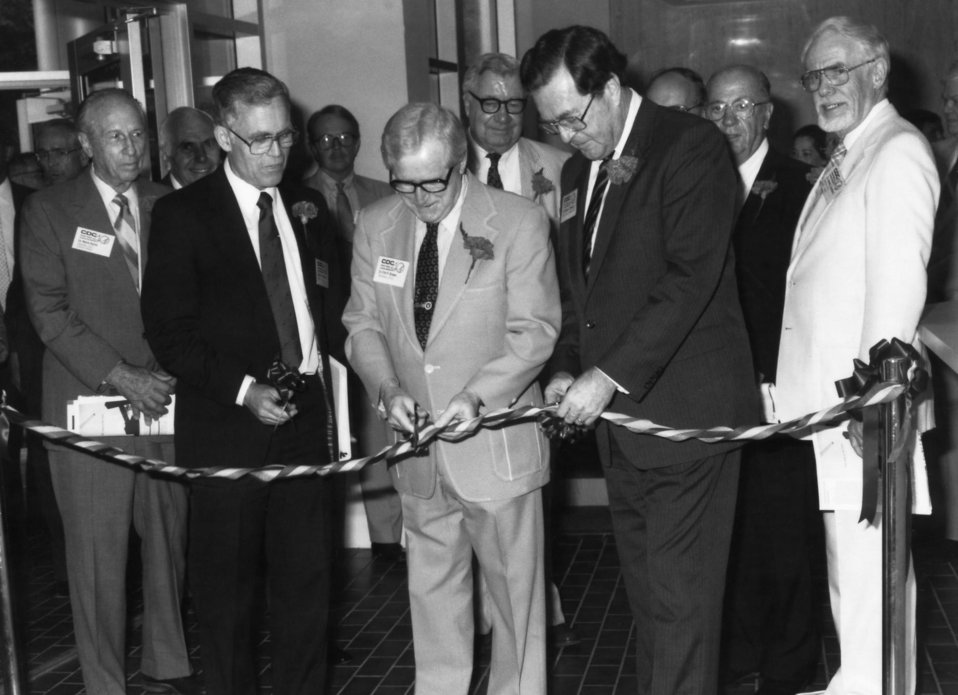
This 1986 photograph showed former Health and Human Services Secretary, Dr. Otis Ray Bowen (center), cutting a ribbon during the Centers for Disease Control's 40th anniversary ceremony.